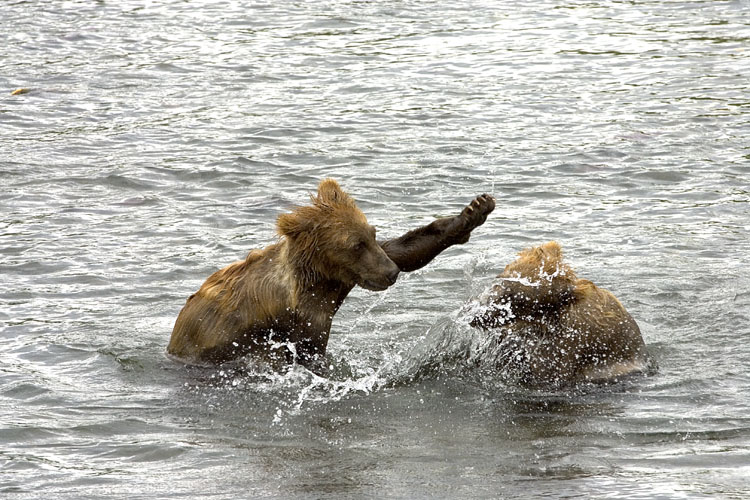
KOD Hildebrand (22)

Kodiak National Wildlife Refuge- Wildlife